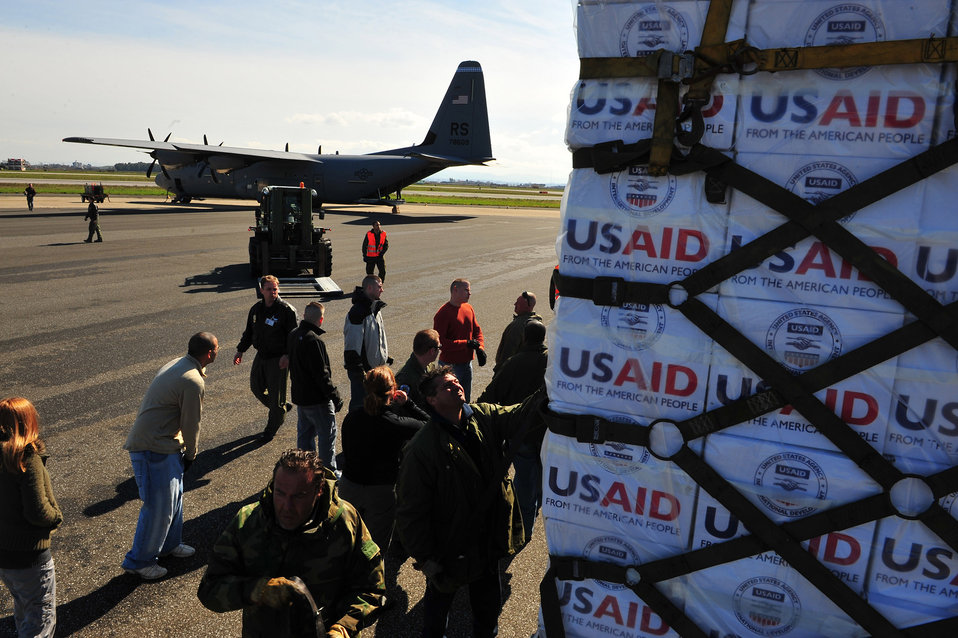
US Aid to Tunisia

March 4th 2011, U.S. Airmen from the 435th Air Mobility Squadron out of Ramstein Air Base load blankets, tarps and water containers onto C-130 aircraft in Pisa, Italy. These aircraft will then fly these supplies to Tunisia. The U.S. Government is working intensely with the International community to meet the humanitarian needs of the Lybian people and others in the country who fled across the borders. U.S. Army Photo by Staff Sgt. Brendan Stephens. Approved for Public Release